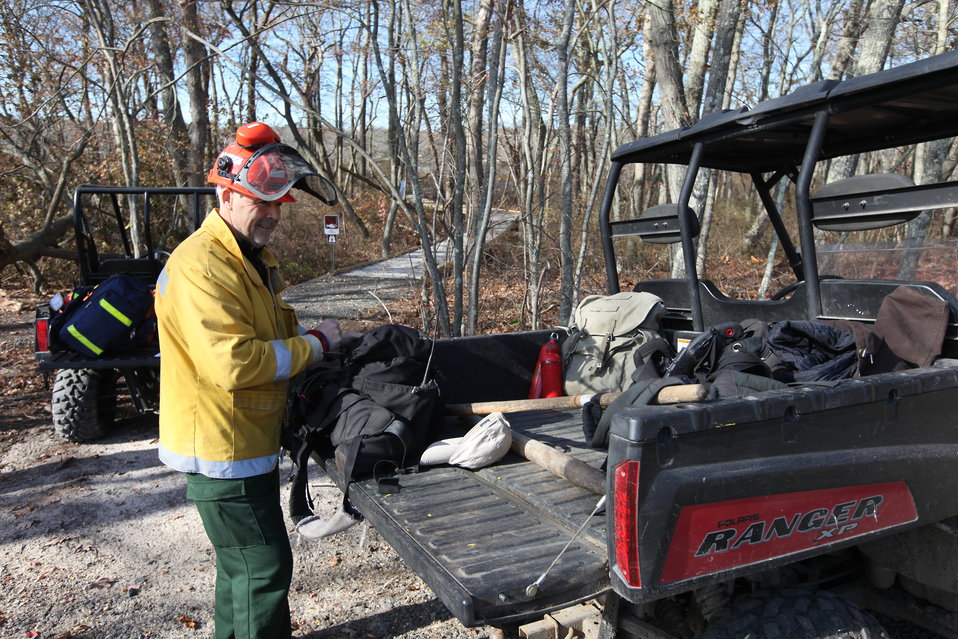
Paul Smith from Moosehorn National Wildlife Refuge

Tree cutting crew member Paul Smith from Moosehorn National Wildlife Refuge assists the Long Island staff in cleanup efforts.